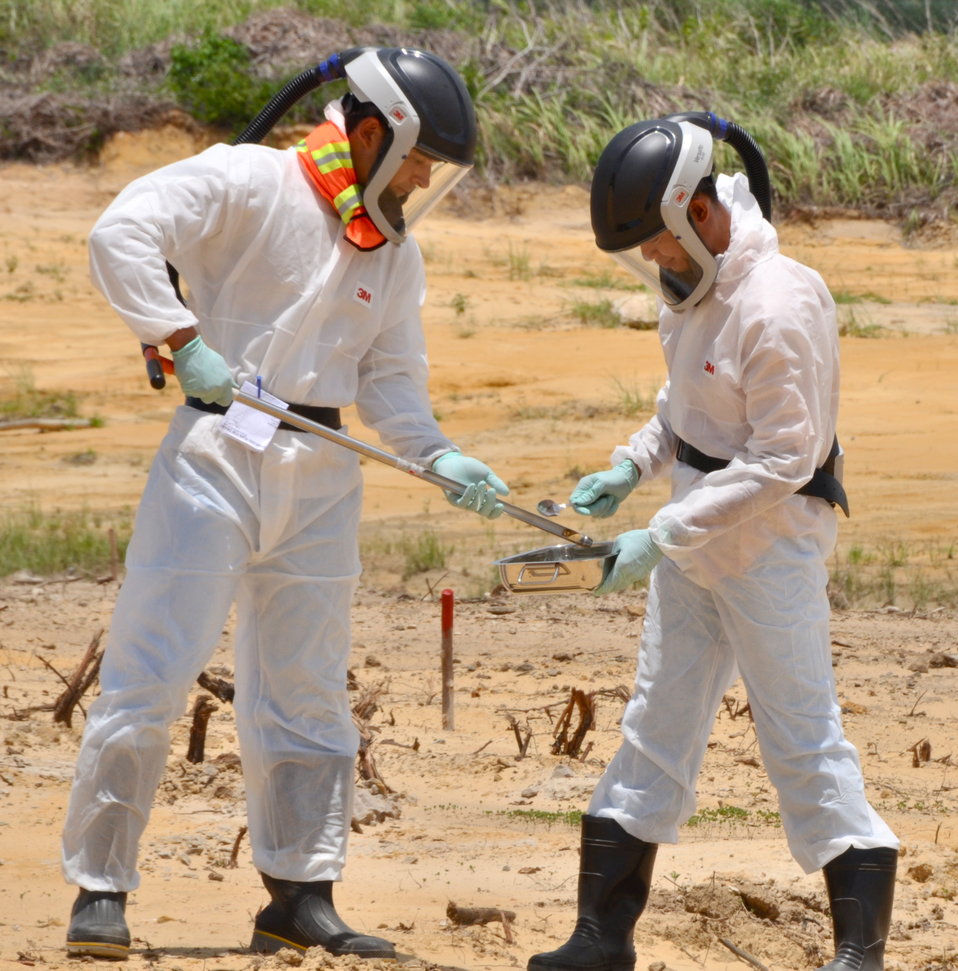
USAID Dioxin Contamination Project Progress: Soil Sampling

Progress at the Environmental Remediation of Dioxin Contamination Project at Danang Airport

July 16, 2013